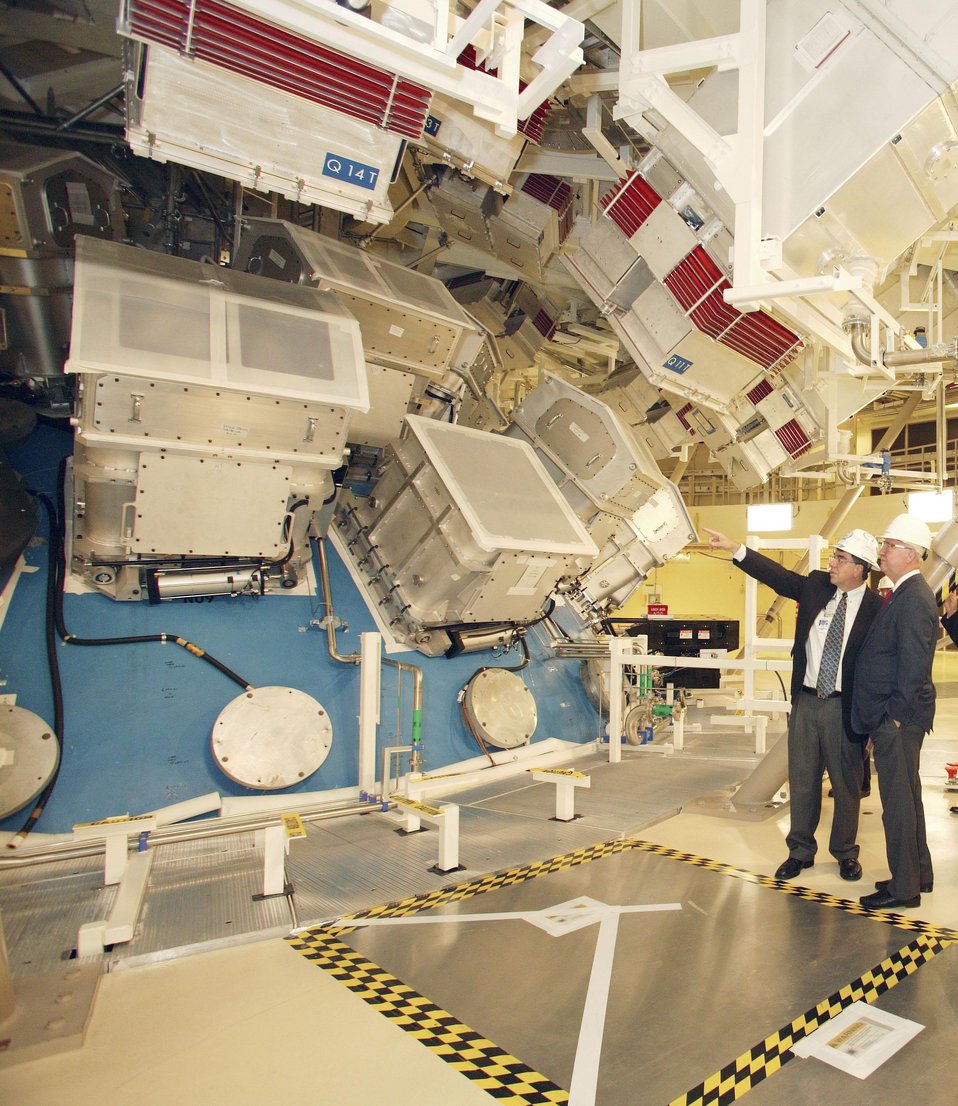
NATIONAL IGNITION FACILITY ASSOCIATE DIRECTOR ED MOSES SHOW TARGET CHAMBER TO ENERGY SECRETARY SAMUEL BODMAN DURING A TOUR OF LAWRENCE LIVERMORE NATIONAL LABORATORY RESEARCH FACILITIES.

NIF ENABLES KEY PROGRAMS AND TECHNOLOGIES THAT SUPPORT DOE'S NATIONAL NUCLEAR SECURITY ADMINISTRATION DEFENSE PROGRAMS AND LLNL MISSIONS, ENSURING THAT THE NATION'S NUCLEAR WEAPONS REMAIN SAFE, SECURE AND RELIABLE. NIF, ONE OF THE CORNERSTONES OF DOE'S STOCKPILE STEWARDSHIP PROGRAM, WILL INTEGRATE THE INITIAL CONFINEMENT FUSION PROGRAM INTO THE OVERALL STOCKPILE STEWARDSHIP PROGRAM AND FOSTER THE DEVELOPMENT OF ASSOCIATED LASER TECHNOLOGIES.